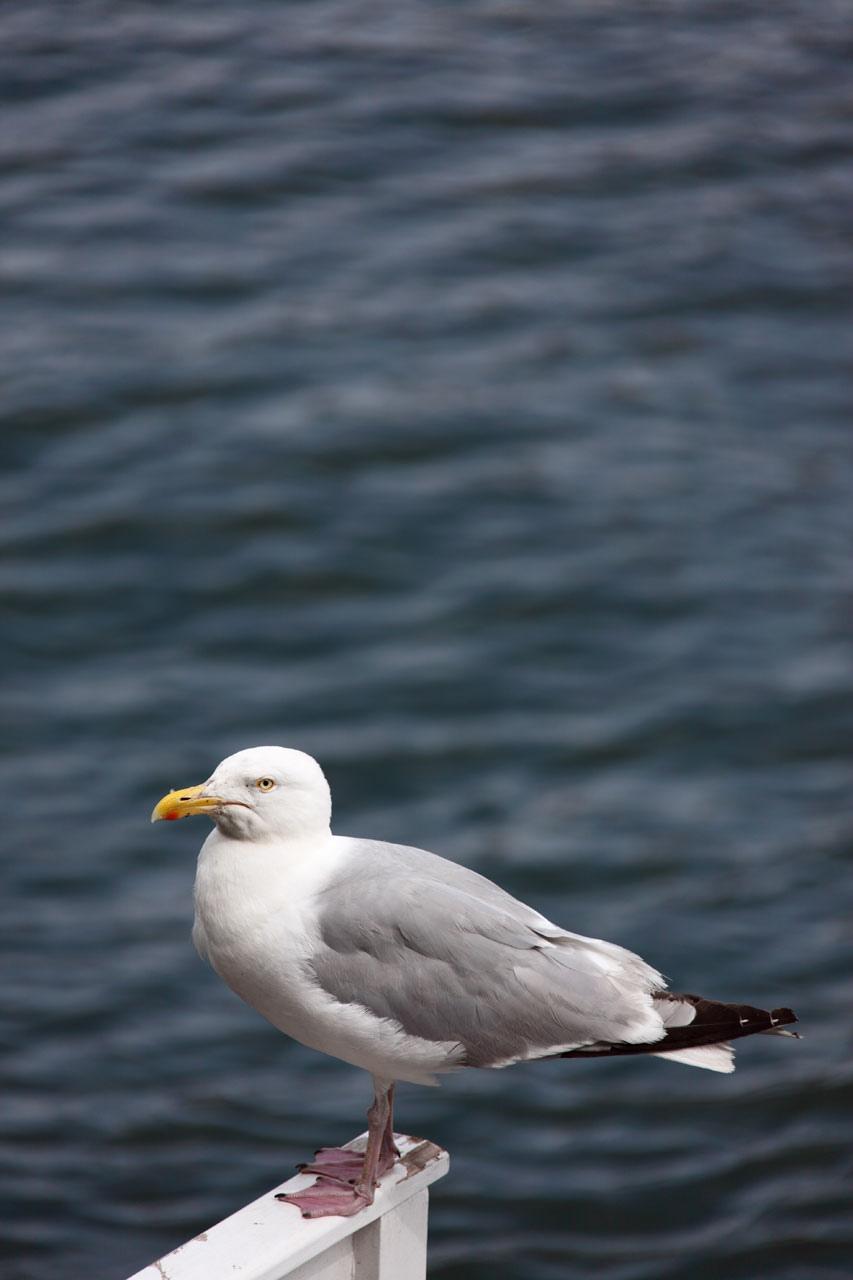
Seagull with copyspace

Seagull with plenty of copyspace.